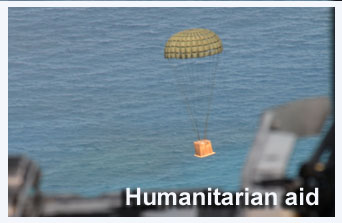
Humanitarian aid

Donated goods drop to a planned location on the Chuuk Islands Dec. 16, 2009, as part of Operation Christmas Drop. Operation Christmas Drop, which began in 1952, is the Air Force's longest-running humanitarian mission. Airmen today continue the tradition delivering supplies to remote islands of the Federated States of Micronesia.